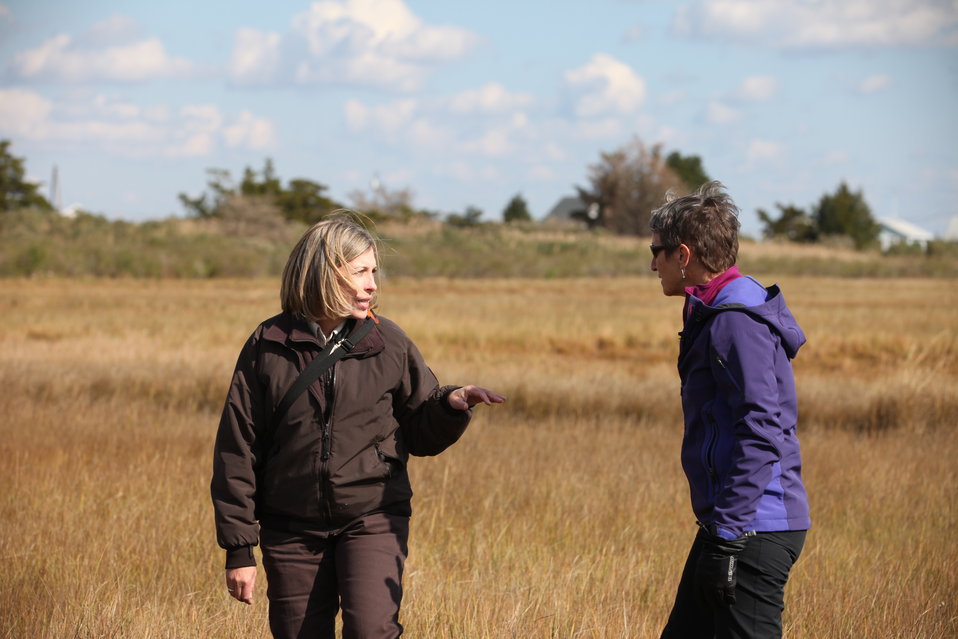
Marsh Tour

Edwin B. Forsythe Refuge Manager Virginia Rettig and other refuge staff showed Secretary Sally Jewell and others some of the monitoring taking place in one of the marshes on the refuge.